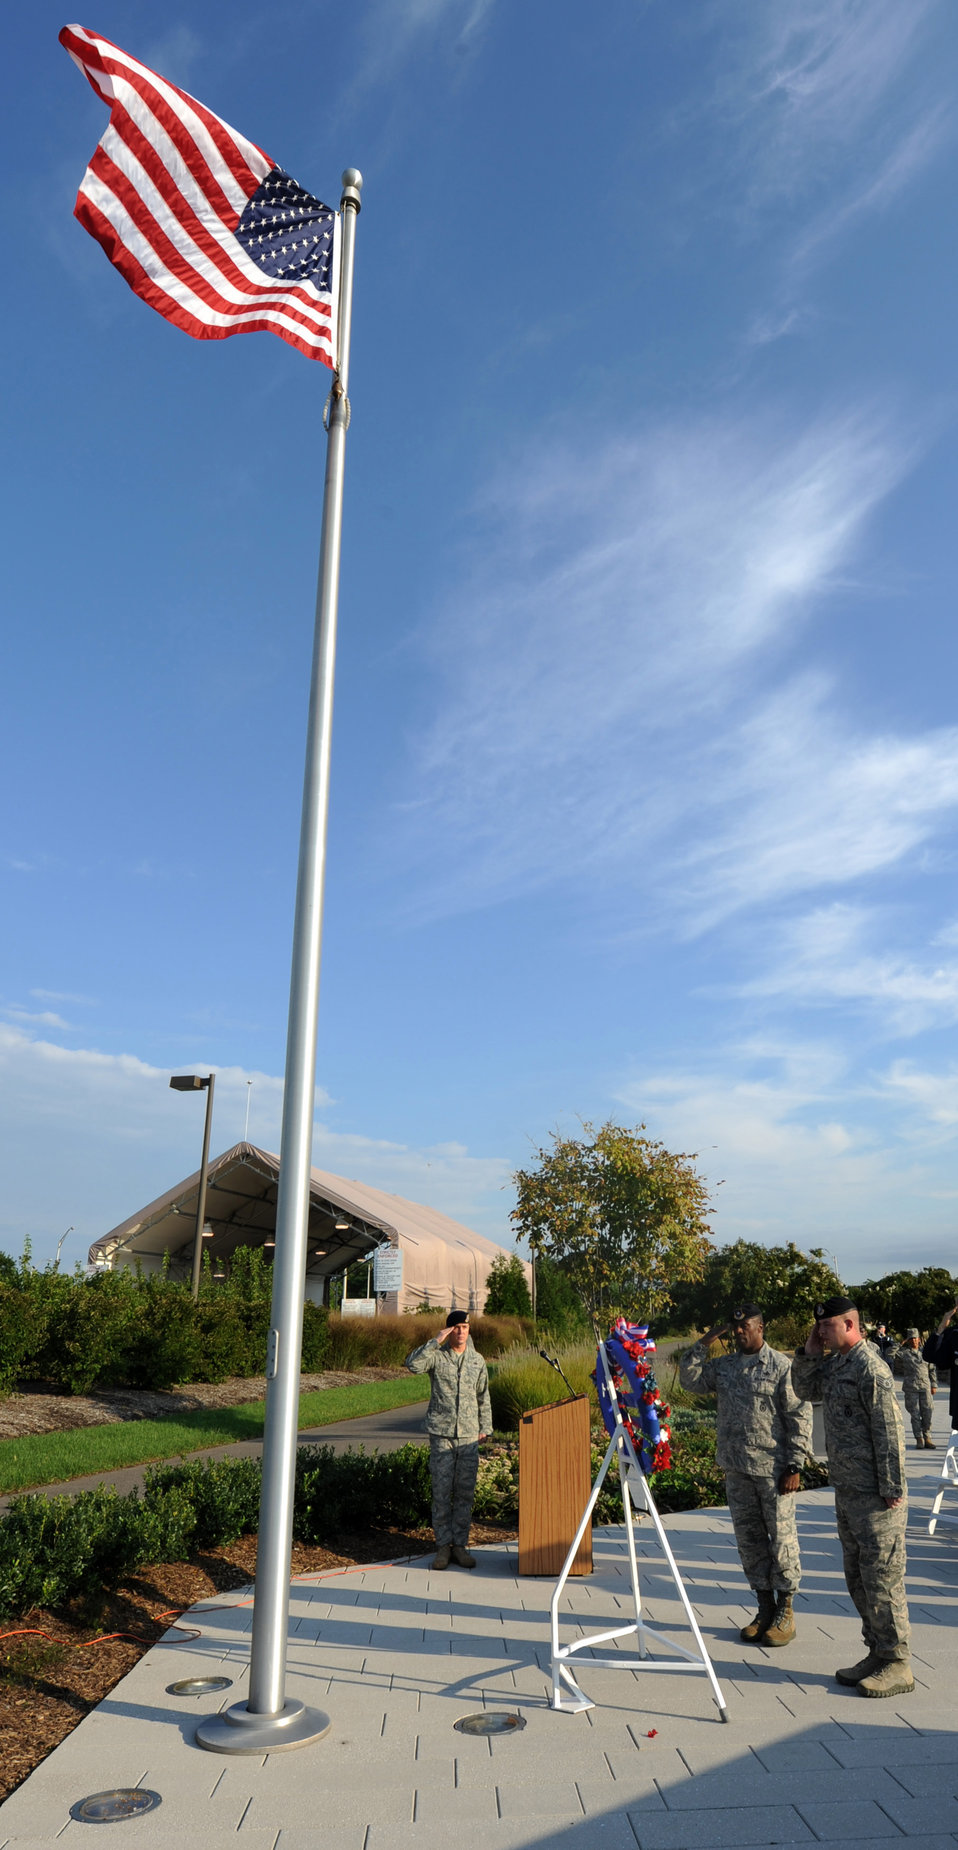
Ceremony kicks off NCR leg of 9/11 Ruck March to Remember

Staff Sgt. Russell Logan, right, and Brig. Gen. Jimmy McMillian, center, salute during a wreath laying ceremony in Arlington, Va., Aug. 29, 2011. Security forces Airmen from across the national capital region participated in the ceremony, beginning their leg of the 9/11 Ruck March to Remember. McMillian is the Air Force’s director of security forces and Logan is a security forces Airman from the 164th Air Lift Wing with the Tennessee Air National Guard.